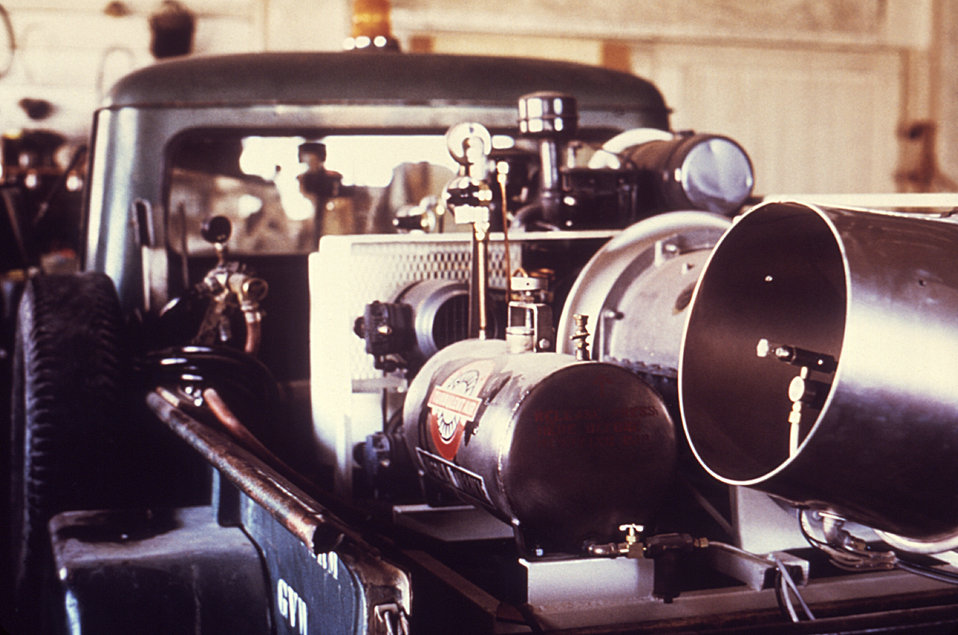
This 1981 photograph depicts a Buffalo Turbine Sonic ULV (ultra-low volume) portable fog generator used in the control of disease vectors by delivering a cloud of insecticide from its nozzle; such disease vectors, which as agricultural nuisances, must be kept in check so as not to damage crops, or become public health hazards.